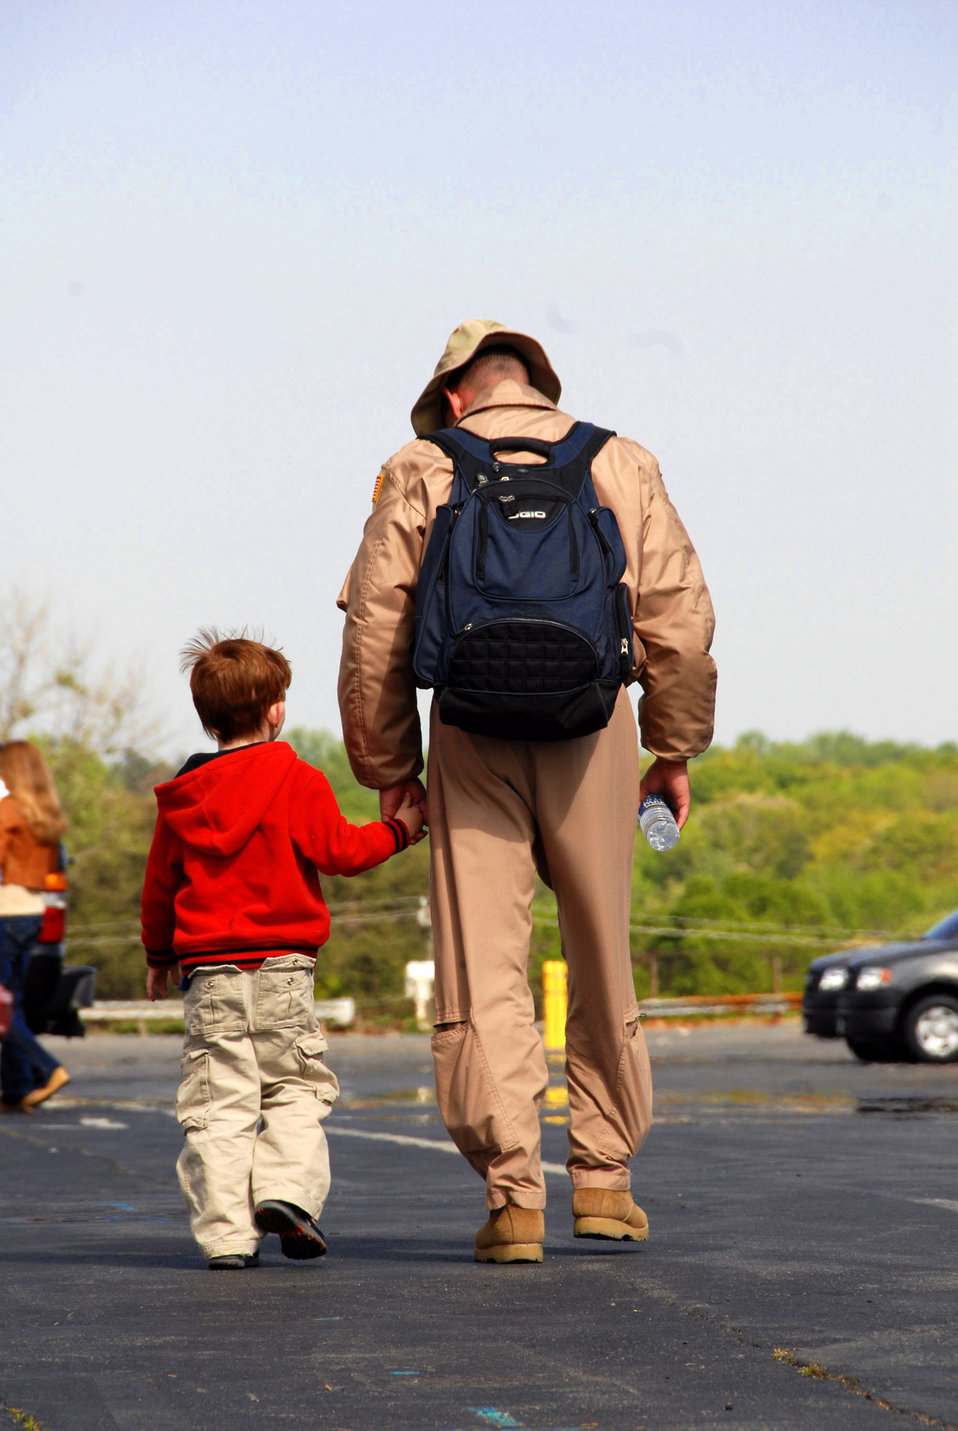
Family members can help

Air Force officials are celebrating National Safety Month this month by combining it with Year of the Air Force Family and including family members in the effort to prevent accidents during summertime, when mishaps tend to spike.